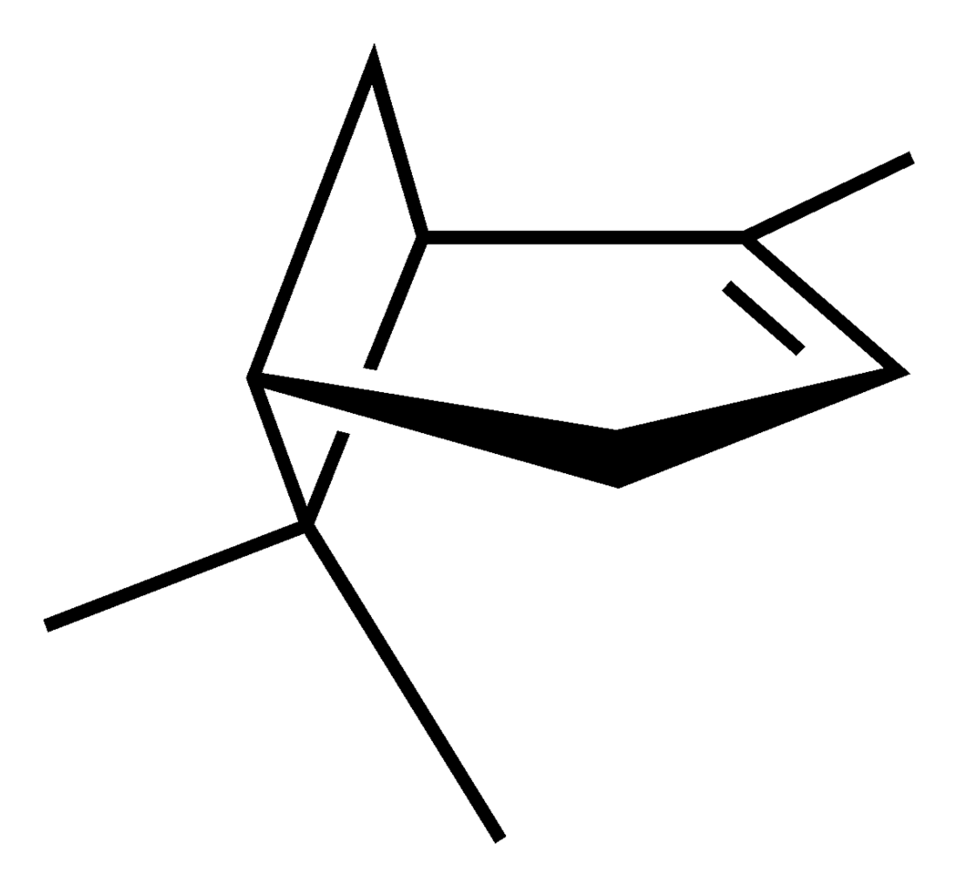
Skeletal formula of ( )-α-pinene